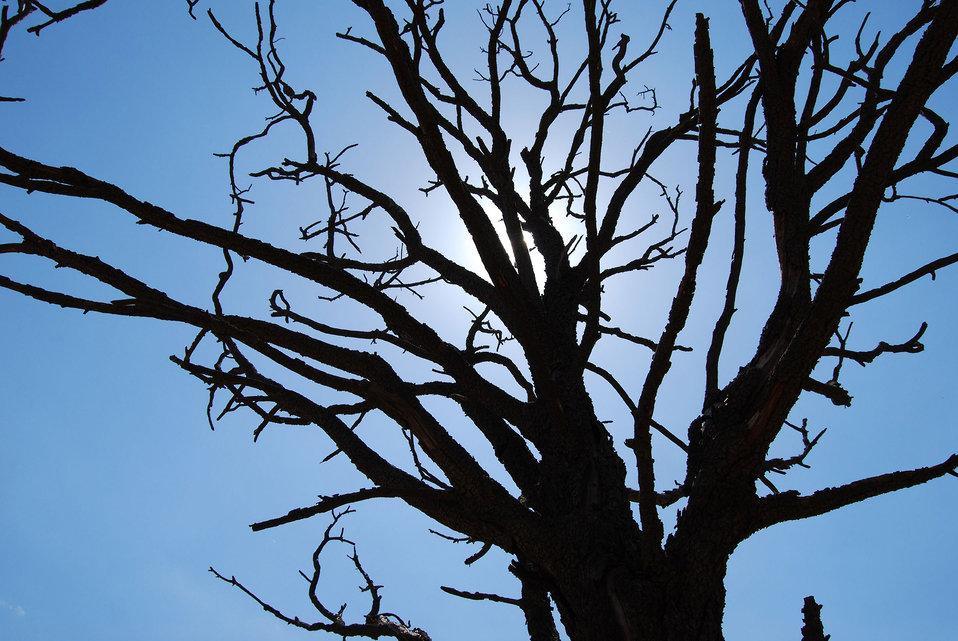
Tree silhouette against blue sky.